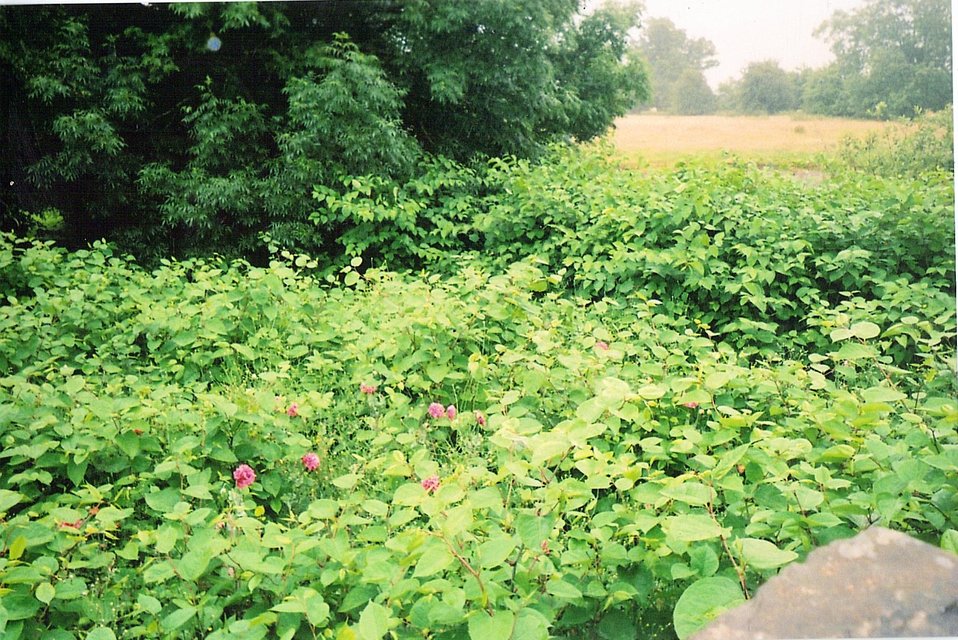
A picture I took of the village of Caersws on my holiday there in 2010. The plants are Japanese knot weed and roses. I donate it to the public domain.